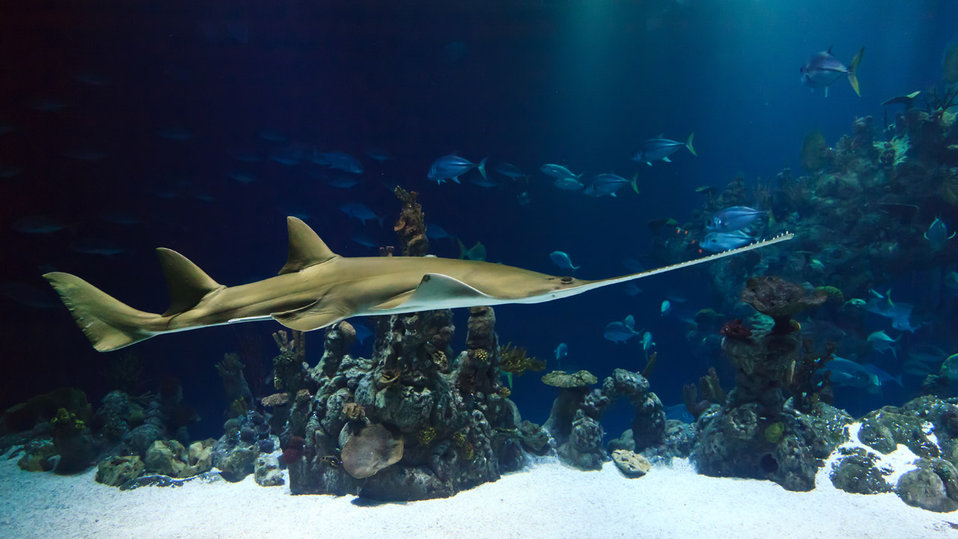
Sawfish

Smalltooth sawfish (pristis pectinata), also known as the carpenter shark.